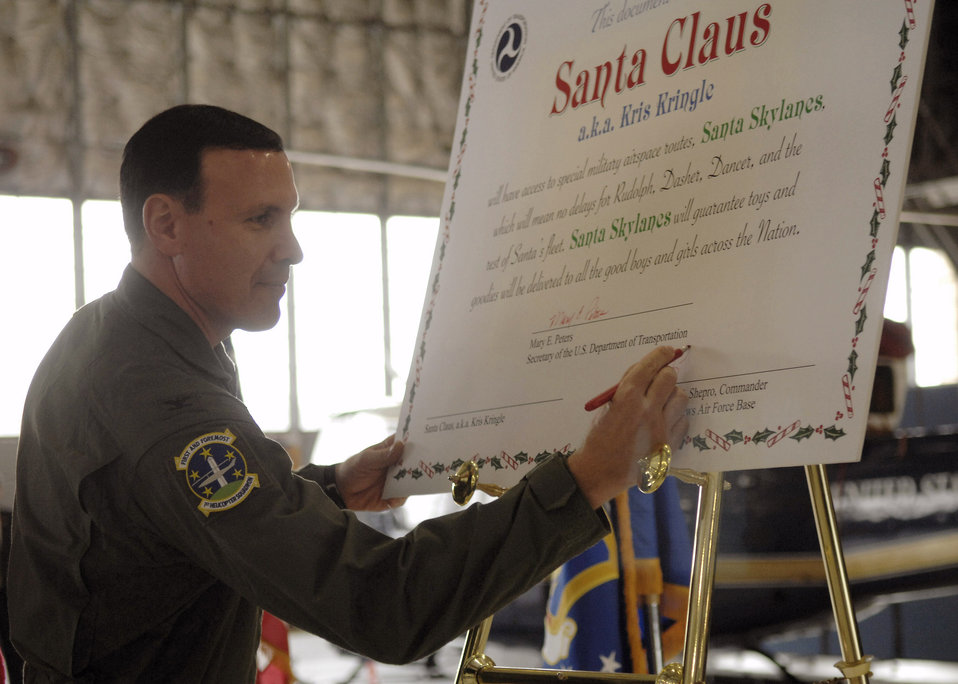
Transportation secretary opens military airspace for Santa

Colonel Steven Shepro signs a document permitting Santa Claus to use designated military airspace Christmas Eve night Dec. 18 at Andrews Air Force Base, Md. The document allows Santa to use